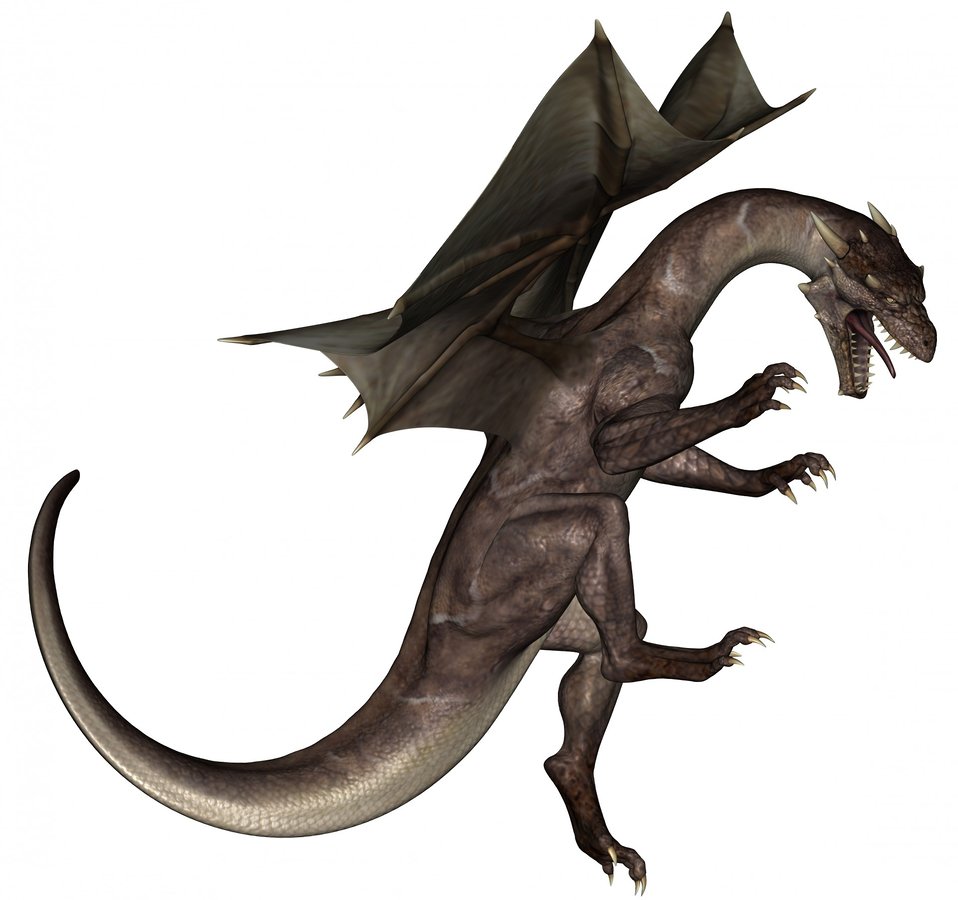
Attacking dragon in 3d.